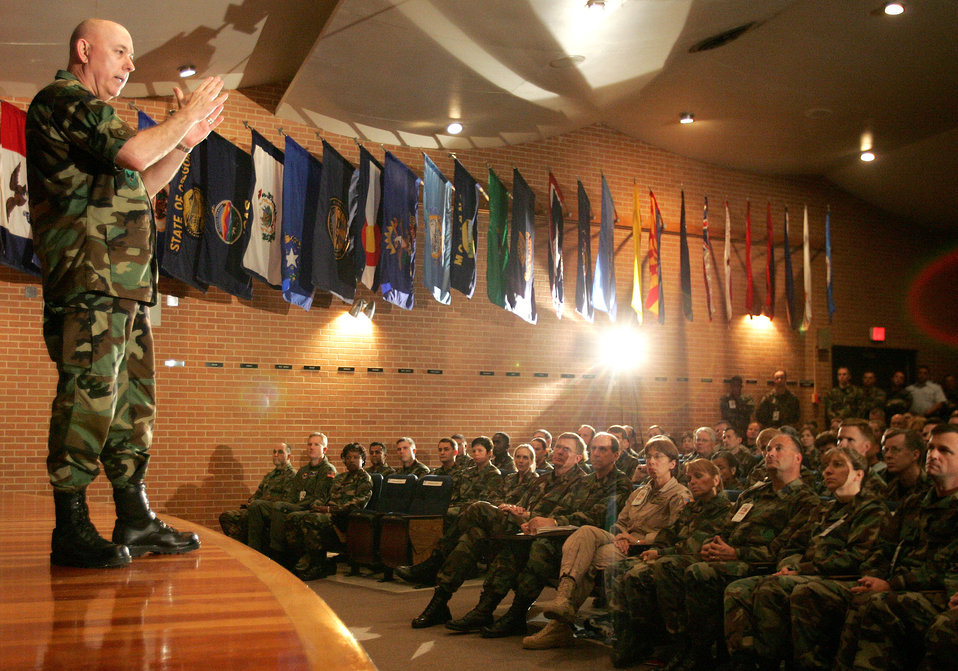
Chief of staff visits Lackland

Gen. T. Michael Moseley, Air Force chief of staff, conducts an officers call at Wilford Hall Medical Center at Lackland Air Force Base, Texas, on Thursday, April 27, 2006.